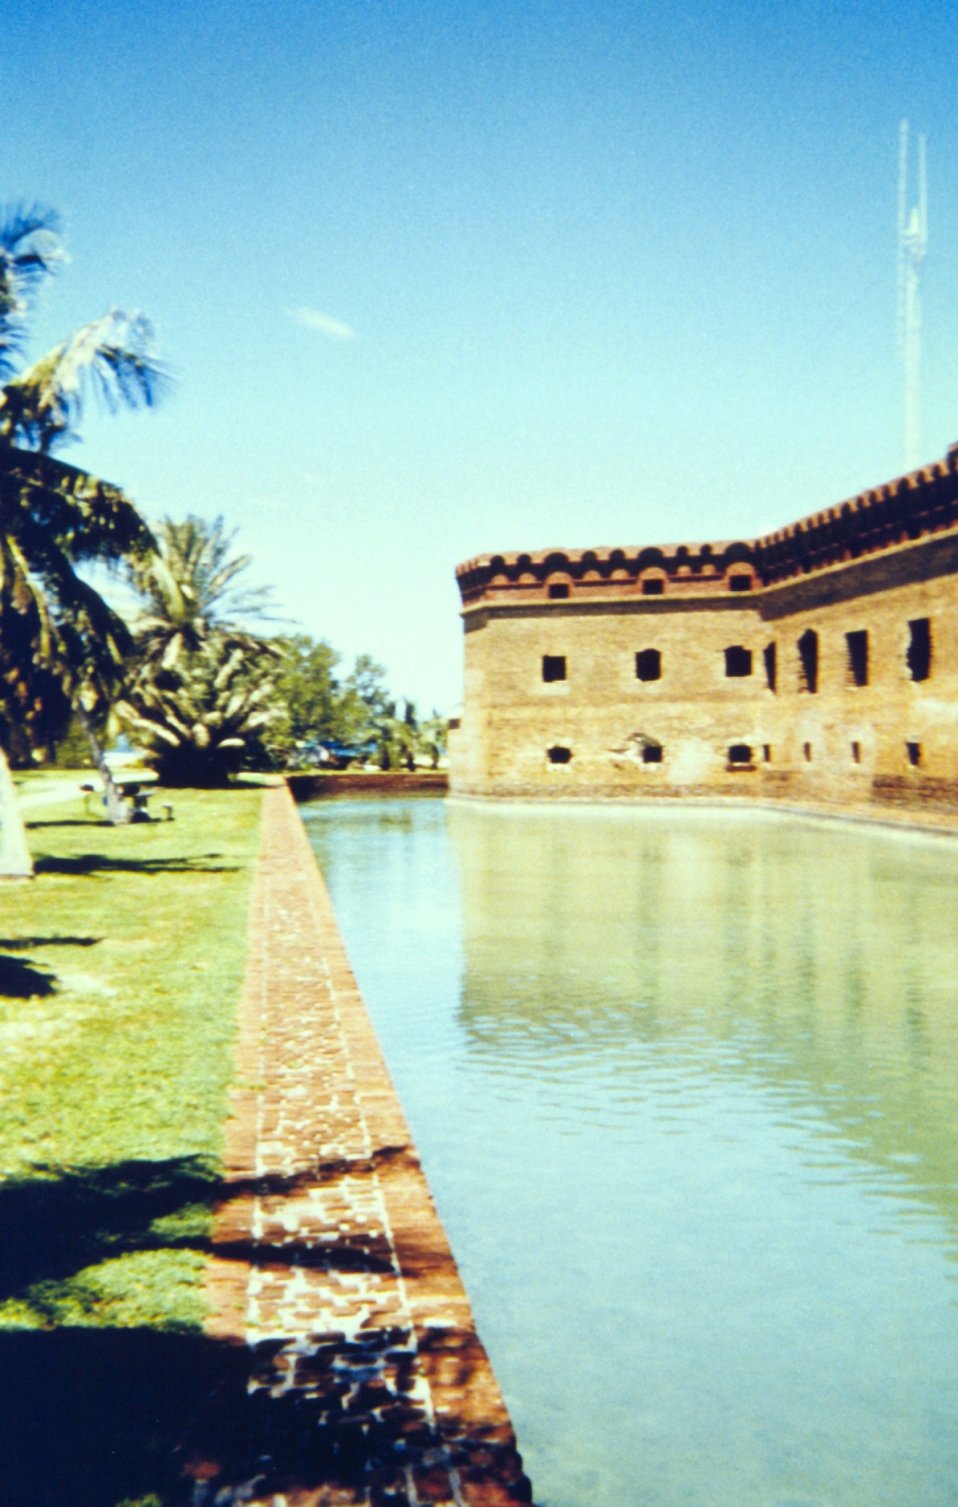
The moat around Fort Jefferson